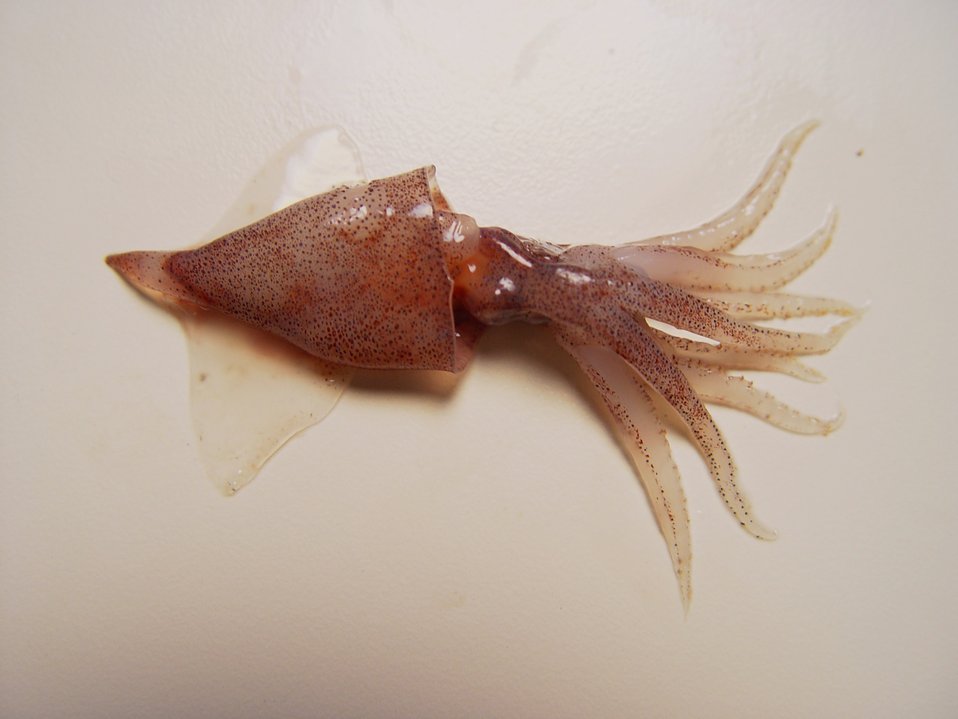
A species of squid ( Abralia redfieldi )